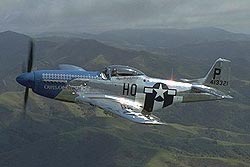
P-51D Mustang

The P-51 Mustang destroyed more enemy aircraft than any other fighter in Europe. In December 1943, Merlin-powered P-51Bs first entered combat over Europe. Providing high-altitude escort to B-17s and B-24s, they scored heavily over German interceptors.